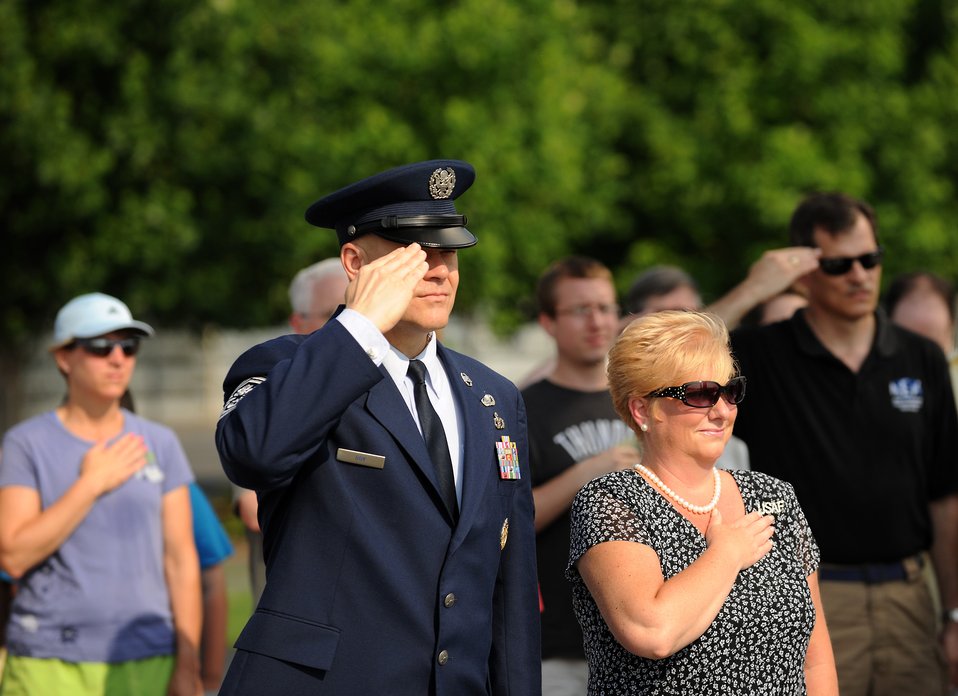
CMSAF Reads Honors Fallen on Memorial Day

Chief Master Sgt. of the Air Force James Roy salutes during the playing of the national anthem at a Memorial Day ceremony May 30, 2011, at the Air Force Memorial in Arlington, Va. The ceremony honored the Airmen who gave their lives in the last year. Those fallen heroes also were honored by wreaths that were presented by Chief Roy and members of several organizations.